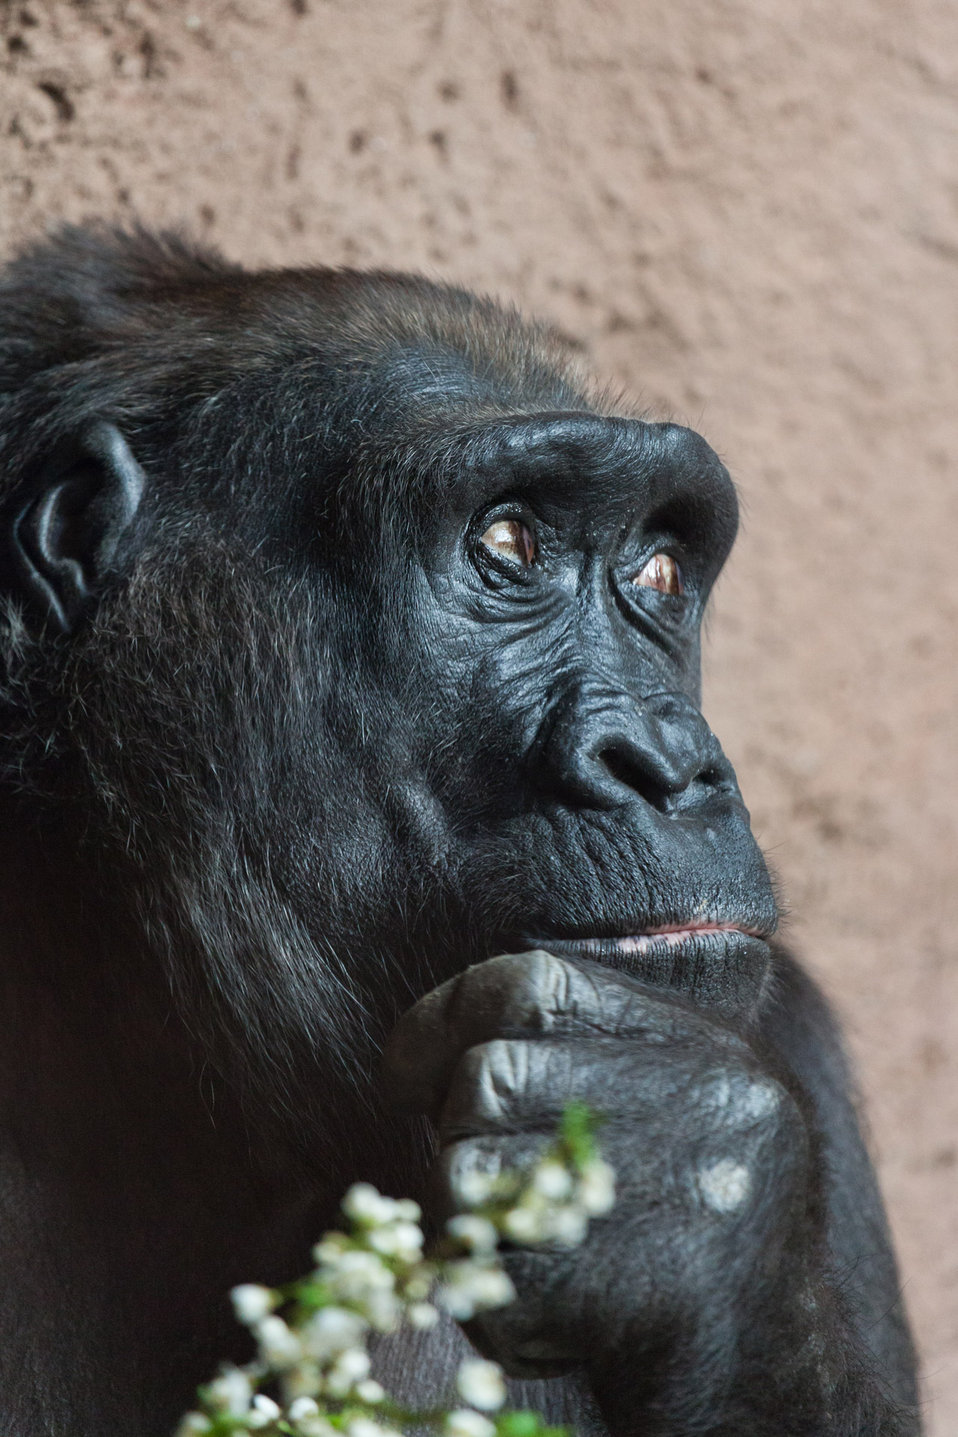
Thinking gorilla

A gorilla is thinking about something important.